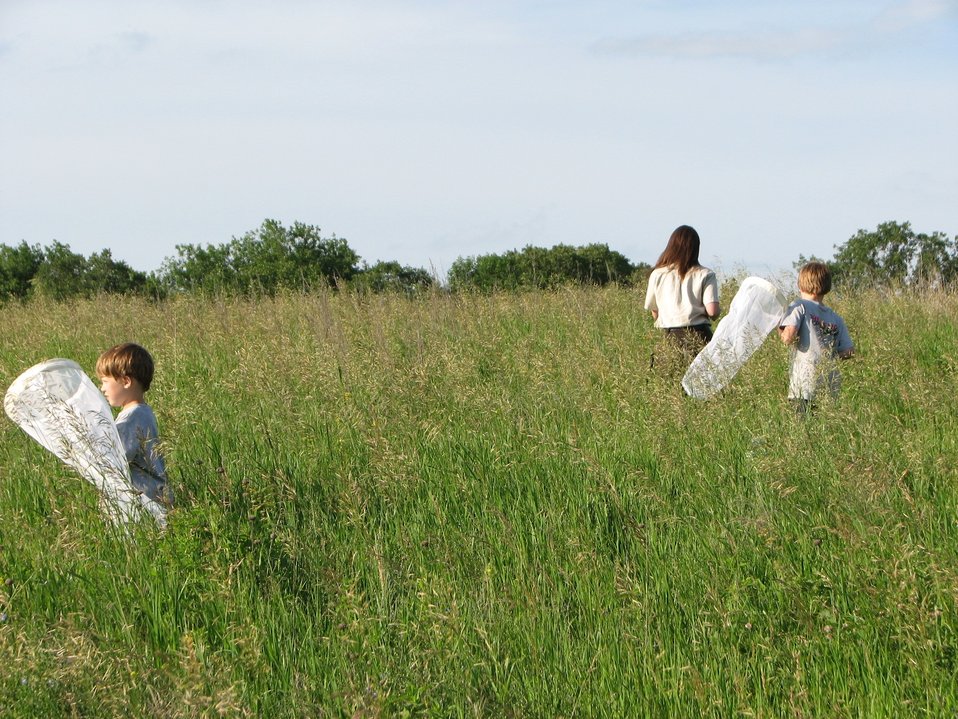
Youth Seeking Pollinators

Let the fun begin! U.S. Fish and Wildlife staff lead a youth program on pollinators at Sullys Hill National Game Preserve in North Dakota.